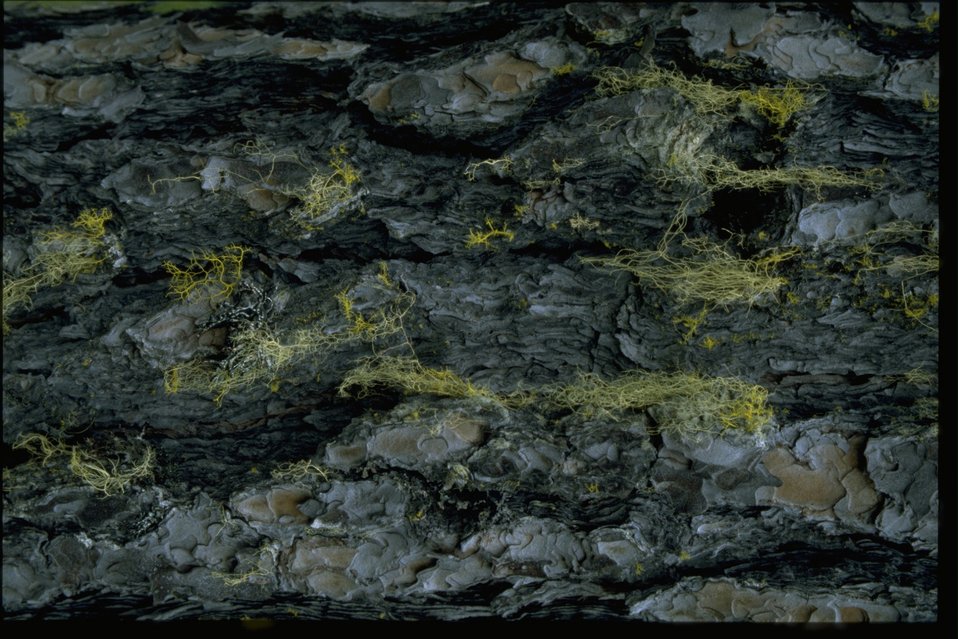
Closeup shot of Yellow Pine (Pinus jeffreyi) bark.